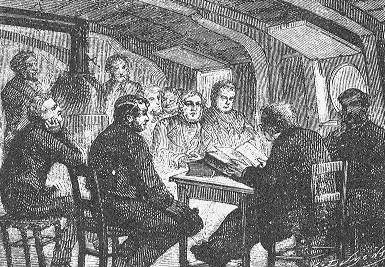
An illustration from Jules Verne's novel 'Journeys and Adventures of Captain Hatteras', part I: 'The English at the Noth Pole' drawn by Édouard Riou and/or Henri de Montaut. Polski: Ilustracja powieści Juliusza Verne'a 'Podróże i przygody kapitana Hatterasa', części I: 'Anglicy na Biegunie Północnym' autorstwa Édouarda Riou i/lub Henri de Montauta. Français : Jules Verne: 'Voyages et aventures du capitaine Hatteras - Les Anglais au Pôle Nord', Édouard Riou et Henri de Montaut.